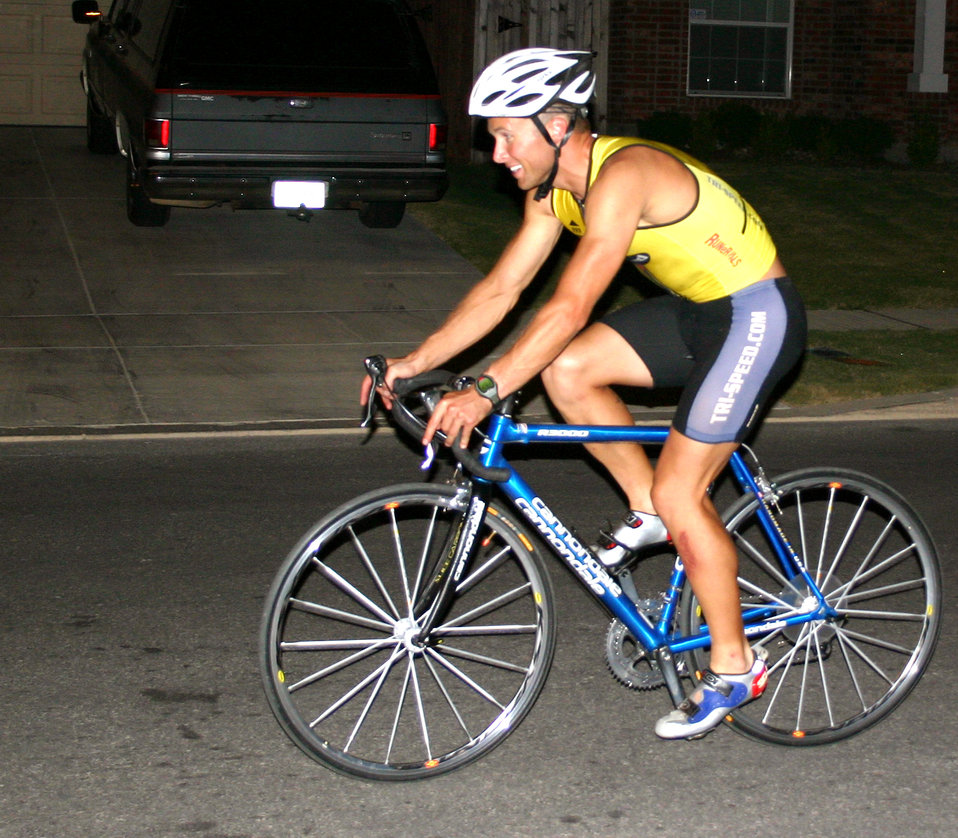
SAN ANTONIO -- Capt. (Dr.) James Bales begins a training ride. He was the 15th-ranked triathlete in the United States in 2004. He is an orthopedics resident with the 859th Surgical Operations Squadron at Wilford Hall Medical Center at Lackland Air Force Base.